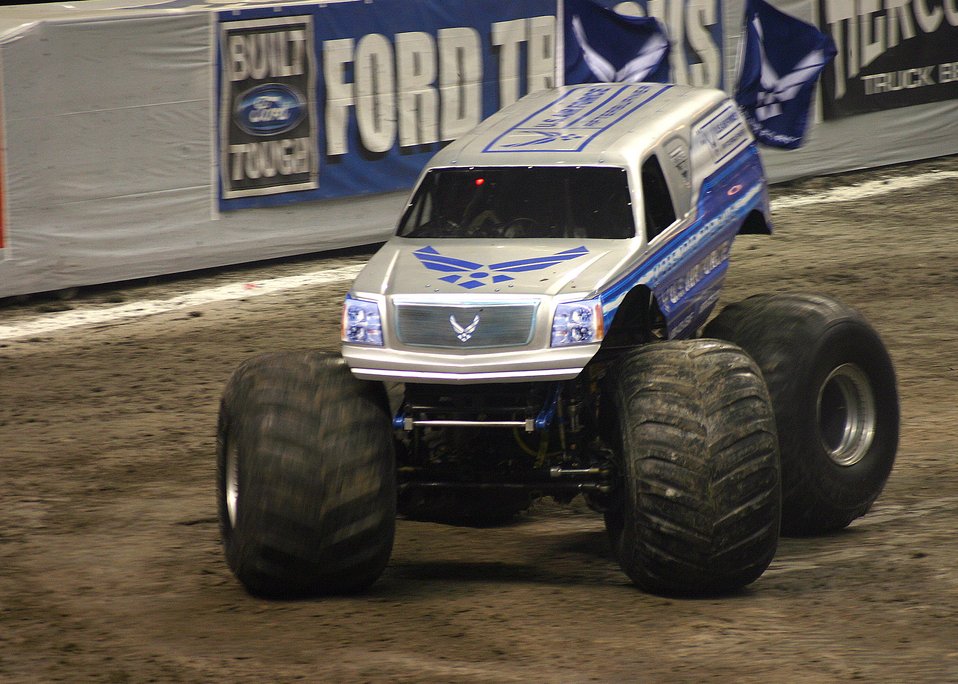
Afterburner flies high in Monster Jam

The Air Force Afterburner, driven by Damon Bradshaw, competes in the freestyle competition Jan. 10 at the Alamodome in San Antonio during the 2009 Monster Jam. Mr. Bradshaw and Afterburner placed second in the event.